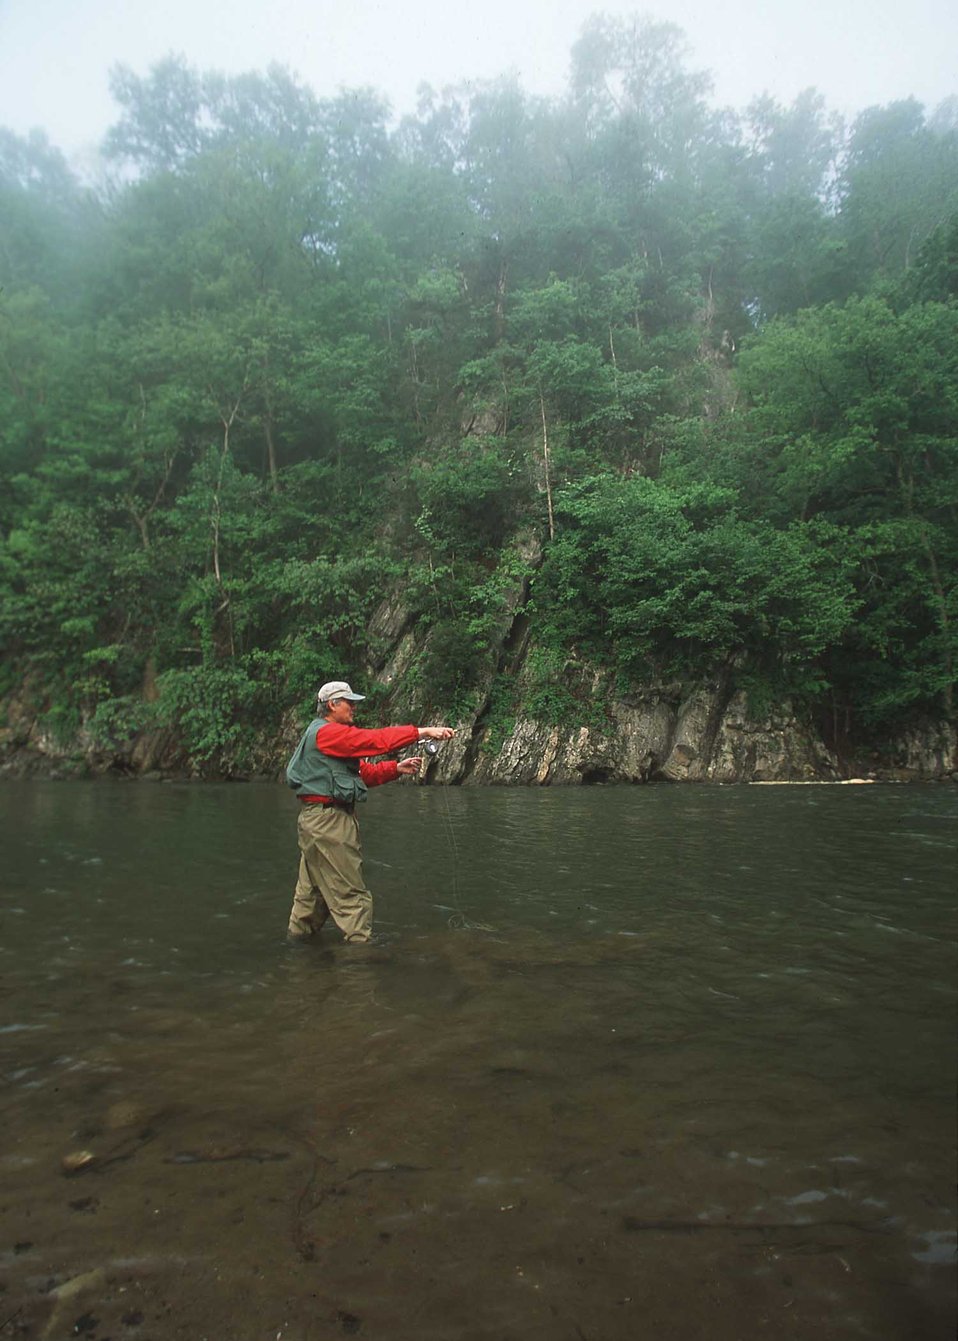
Fly fisherman on the South Fork of the Holston River. The river is one of the 10 Heritage rivers in the US. NRCS worked with local farmers and other agencies in providing buffers, fencing for livestock, roational grazing, tree planting and recreational opportunities while at the same time improving water quality and wildlife habitat.